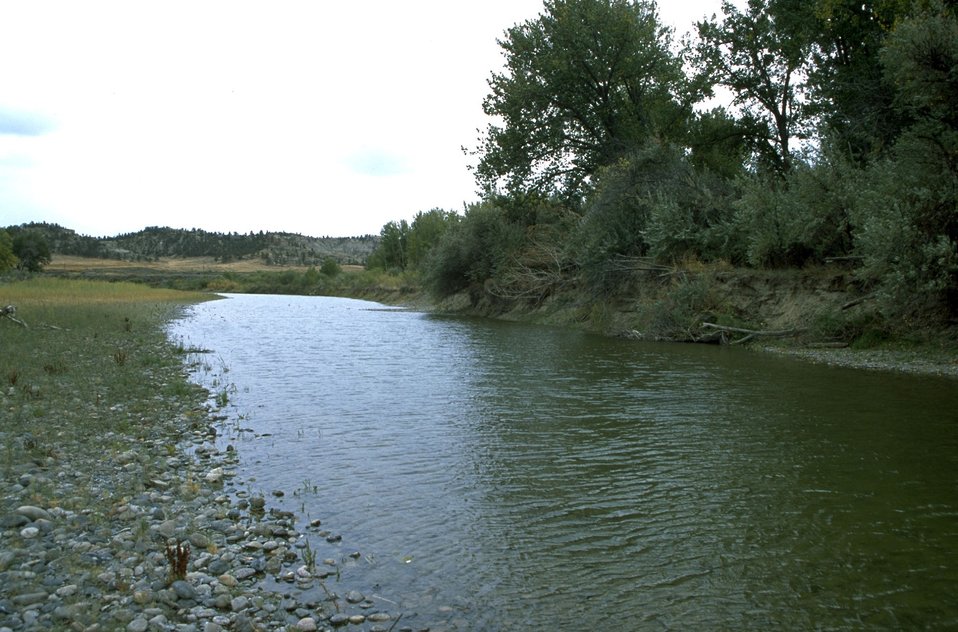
Channel of the Yellowstone River at Howrey Island Recreation Area